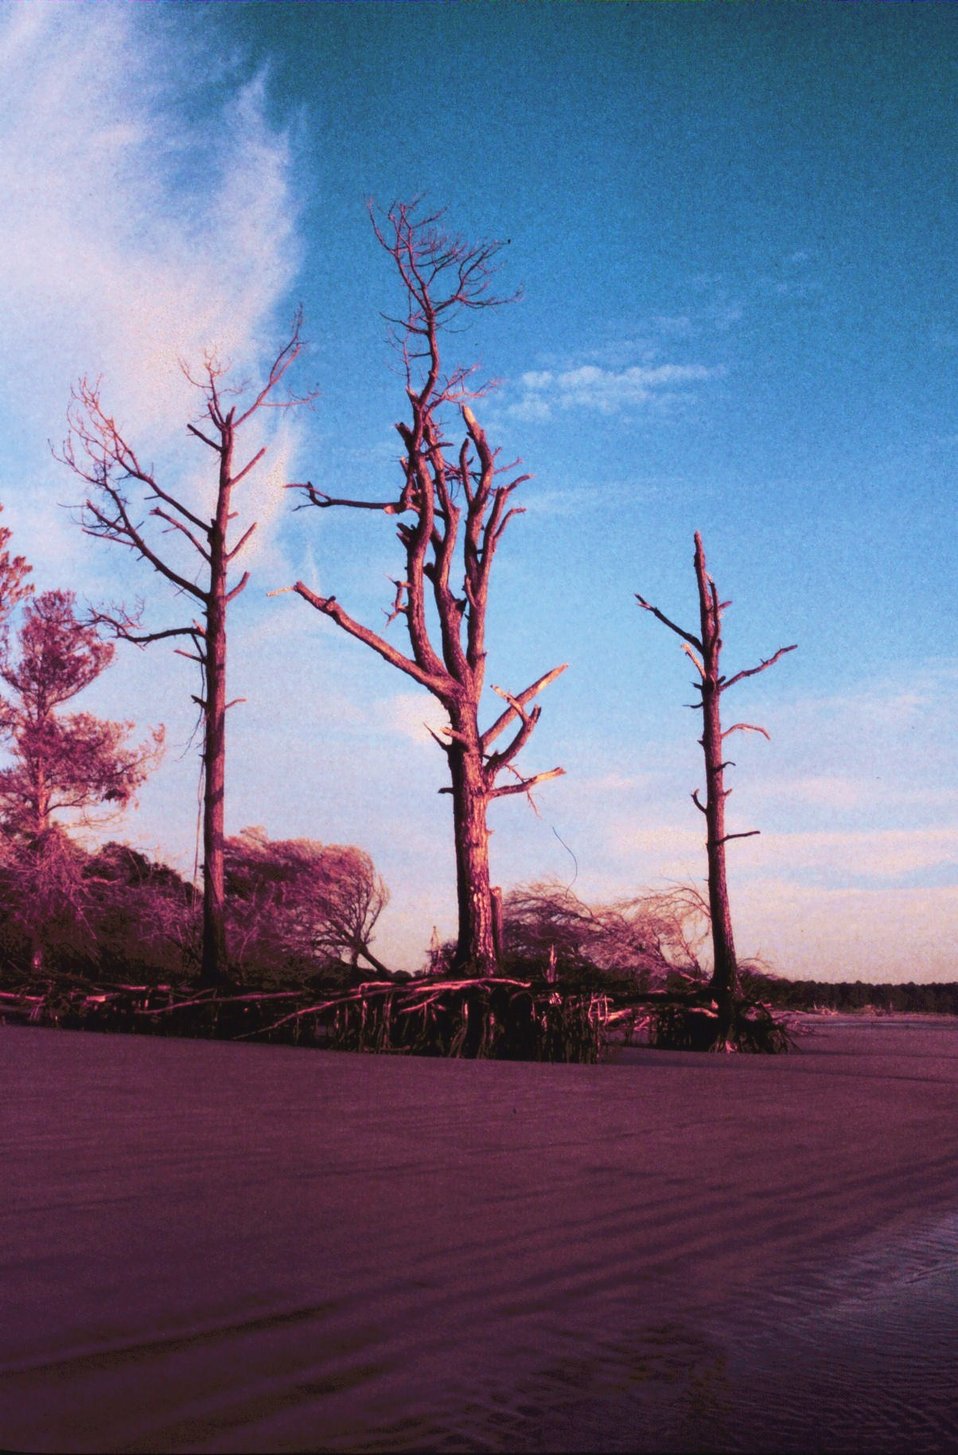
Tree roots exposed because of erosion on the north end of Sapelo's beach. Typical of barrier islands, sand from the north end of Sapelo and Blackbeard is eroded away by ocean currents and deposited at the south end where sand dunes continue to build. The erosion leaves behind trees that were once protected by dunes exposed to the ocean.